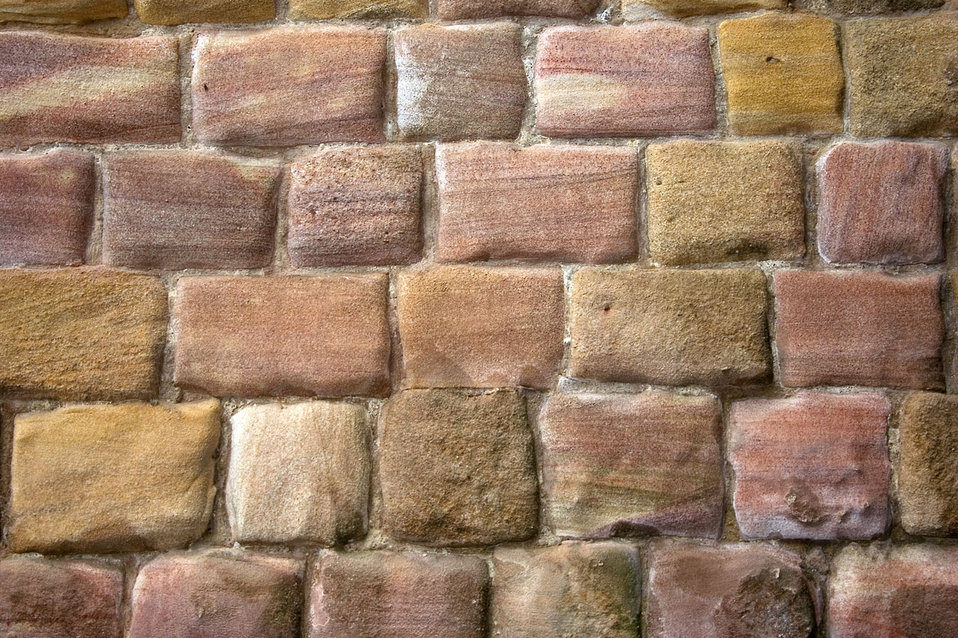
Stone wall in fountains abbey.